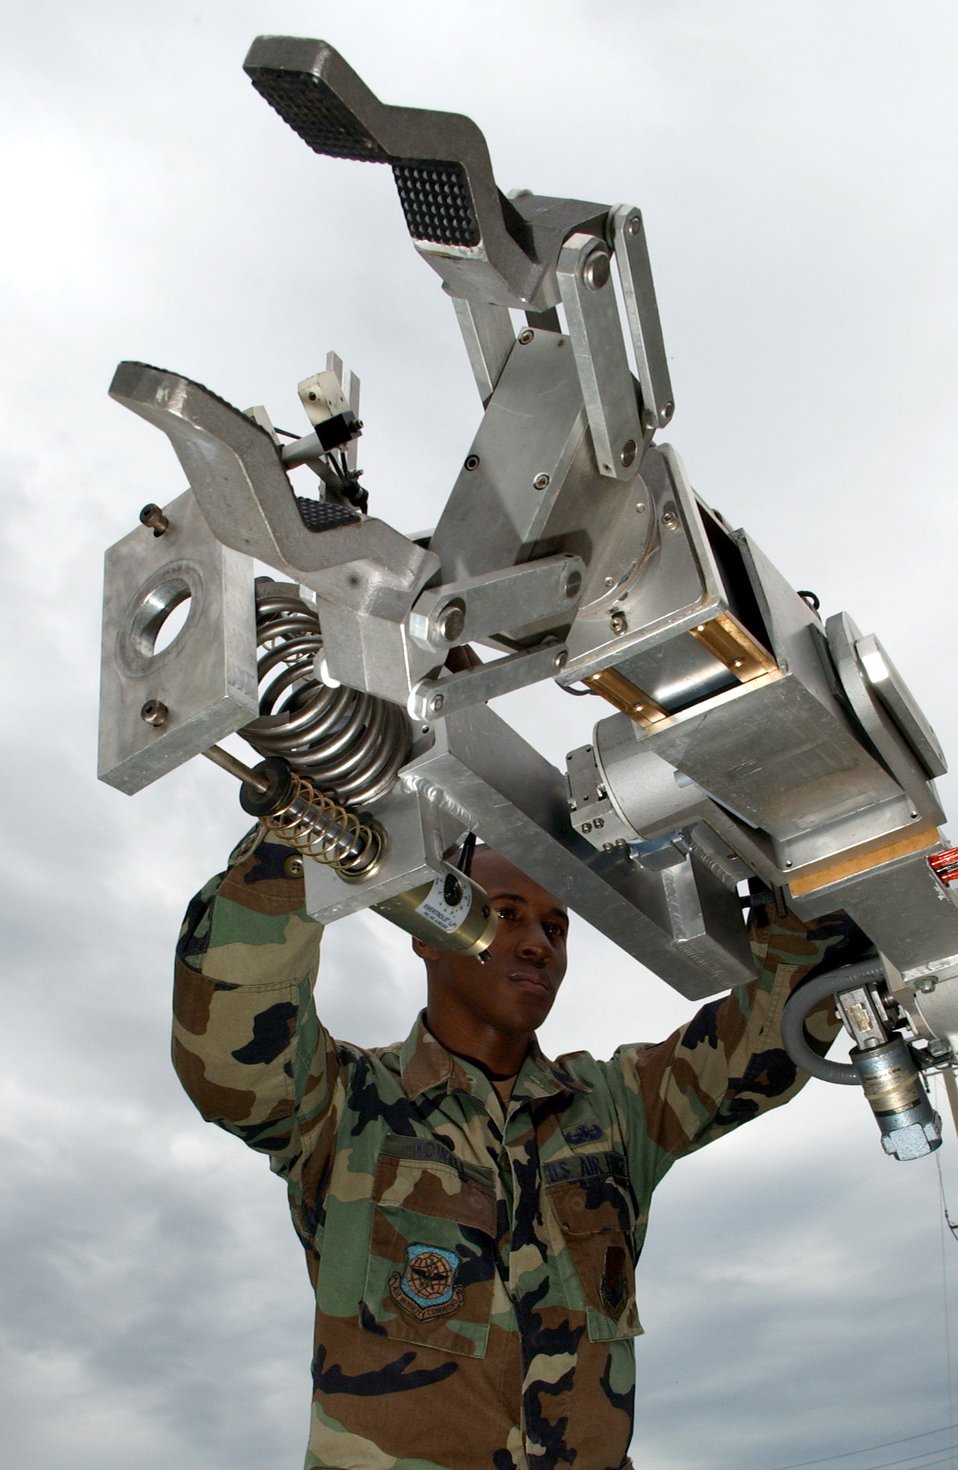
Robot work

MACDILL AIR FORCE BASE, Fla. (AFPN) -- Senior Airman Wayne Howell does a preventive maintenance inspection here on a remote operated neutralization system Jan. 30. The system is used to retrieve explosive devices. Airman Howell is an explosive ordnance disposal technician with the 6th Civil Engineer Squadron.